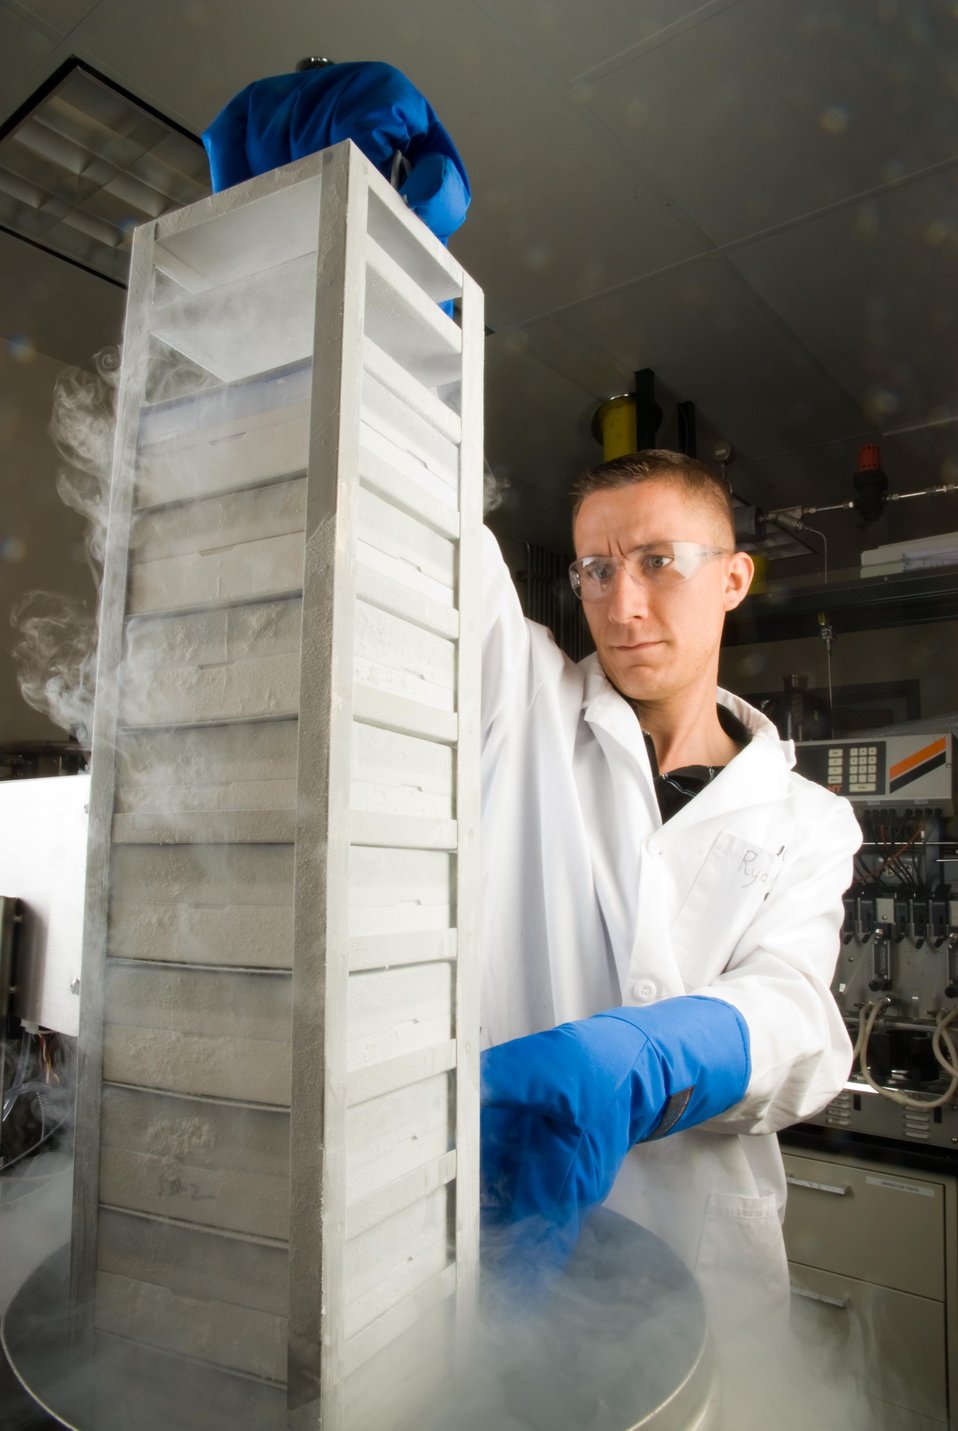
SHOWN IS ALGAL CRYOPRESERVATION SYSTEM AT NREL.

An NREL researcher removed boxes of algae cultures from cryopreservation tank. The tank is cooled using liquid nitrogen, which freezes and preserves the algae cultures. NREL has more than 10,000 algae cultures in its collection. The researchers are studying microalgae as potential source of biofuels.